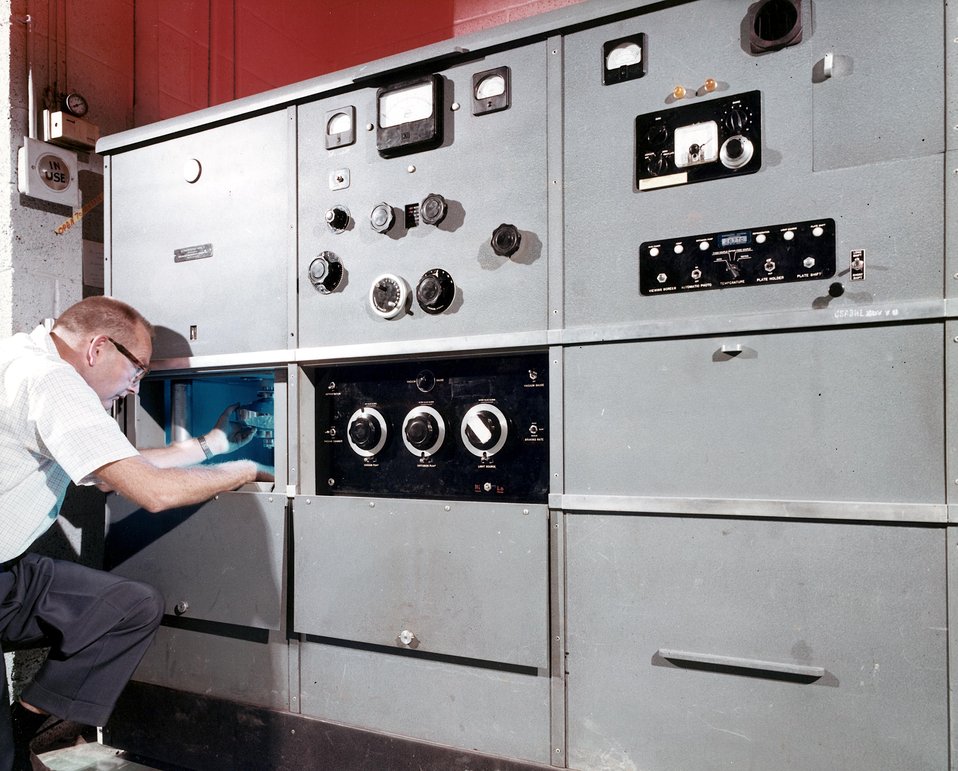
The size of protein molecules is of great interest to biochemists.
An estimation can be made in the analytical ultracentrifuge by
observing the rate of sedimentation of a pure protein.